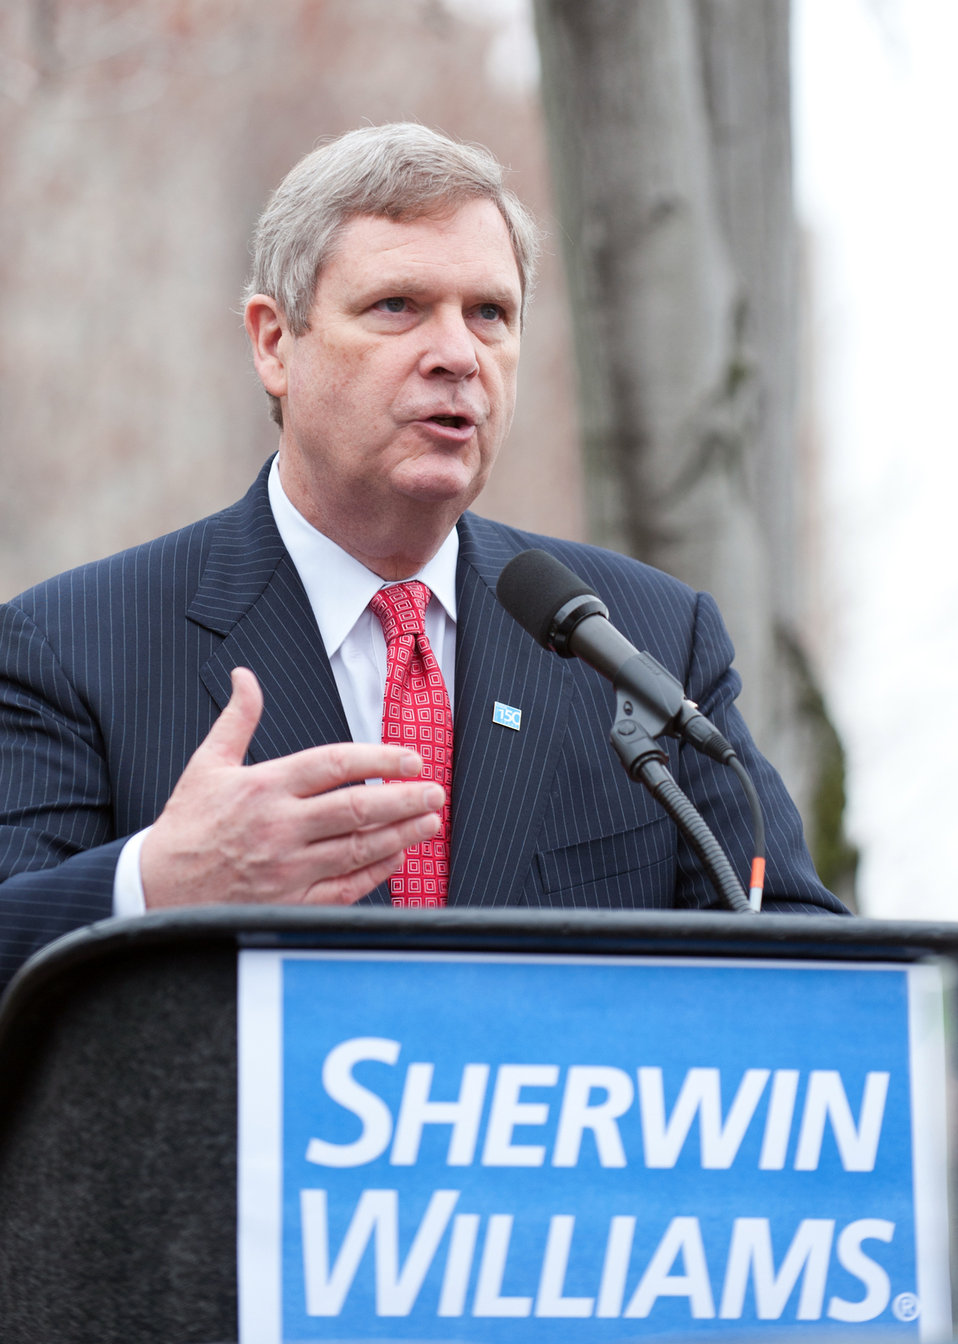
Agriculture Secretary Tom Vilsack makes remarks at the Sherwin-Williams John G. Breen Technology research facility in Cleveland, Ohio on March 16, 2012 on a visit to Ohio and Michigan.